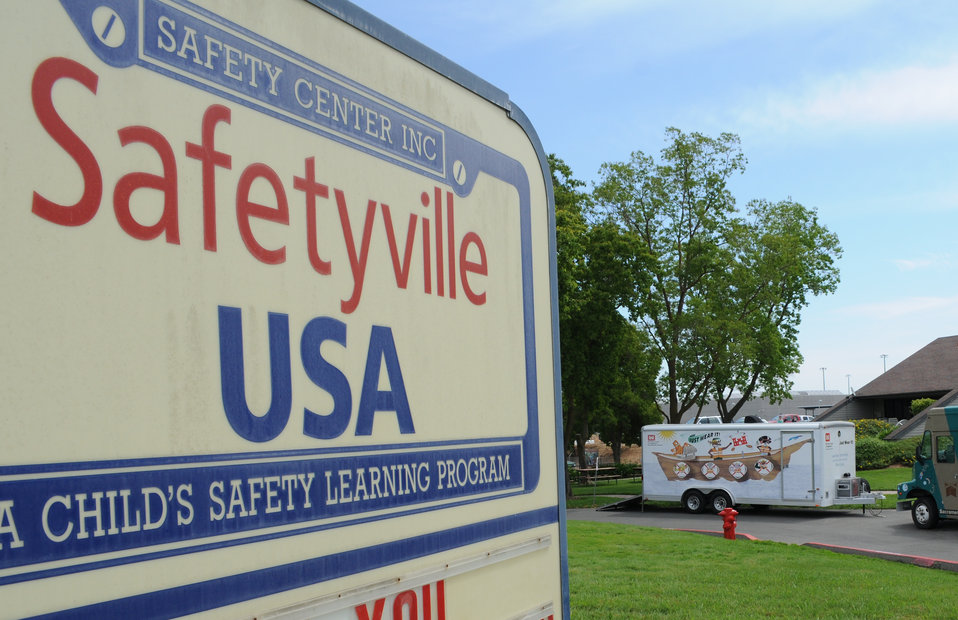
Water Safety Trailer at Safetyville USA

The Sacramento District water safety trailer adds to the convoy of information booths, lined up for the 13th annual Family Safety and Health Expo at Safetyville USA here June 11, 2011. More than 65 vendors, organizations, and agencies supported the event, aimed at families’ health and safety. “Water safety is our message,” said Friedman, the district’s senior ranger. “Life jackets are a key to surviving cold water. But it won’t work if you don’t wear it!”